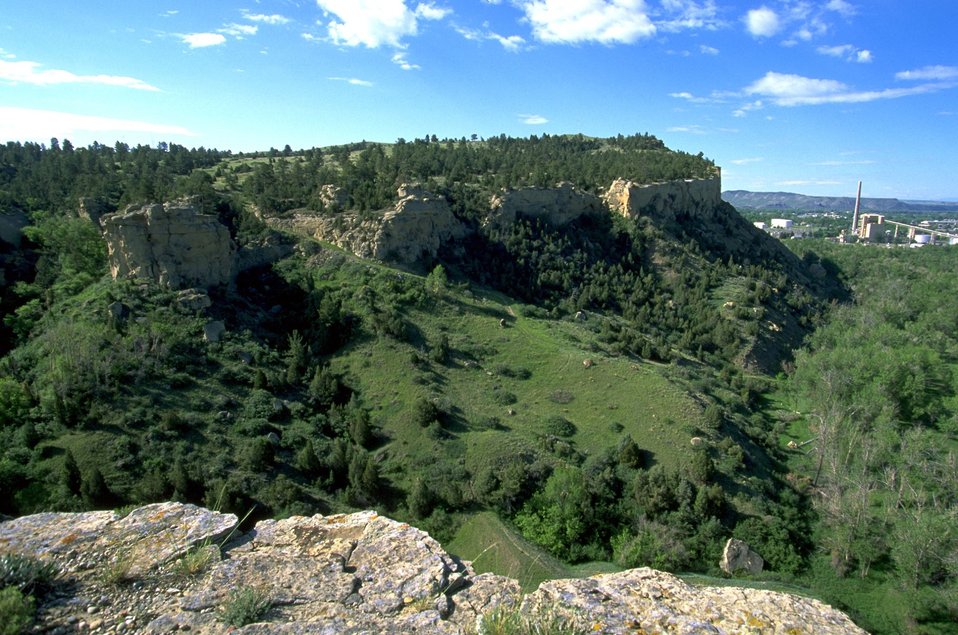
Sandstone cliffs east of Billing in the Four Dances Natural Area